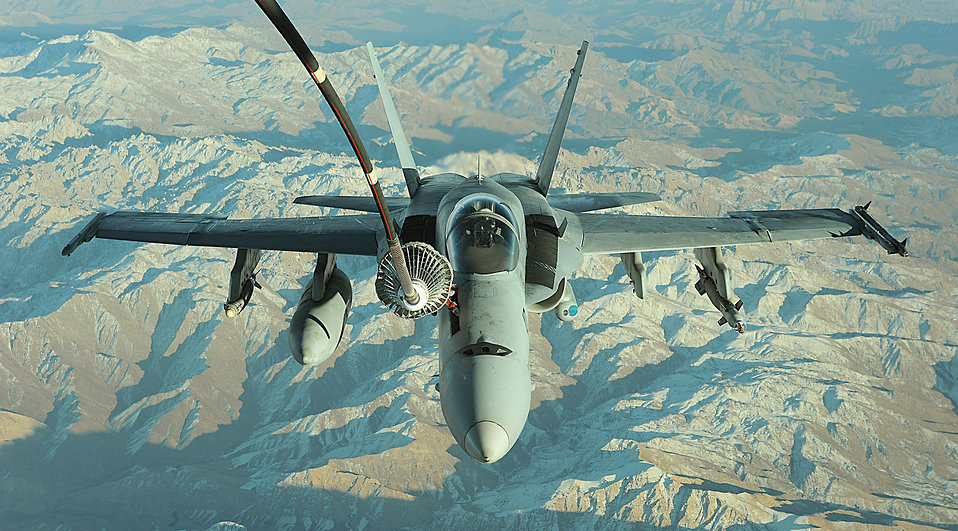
Fuel for fighters

A KC-10 Extender from the 908th Expeditionary Aerial Refueling Squadron refuels a Navy F/A-18 Super Hornet Dec. 11 over Afghanistan. The KC-10 holds six tanks that carry more than 356,000 pounds of fuel.